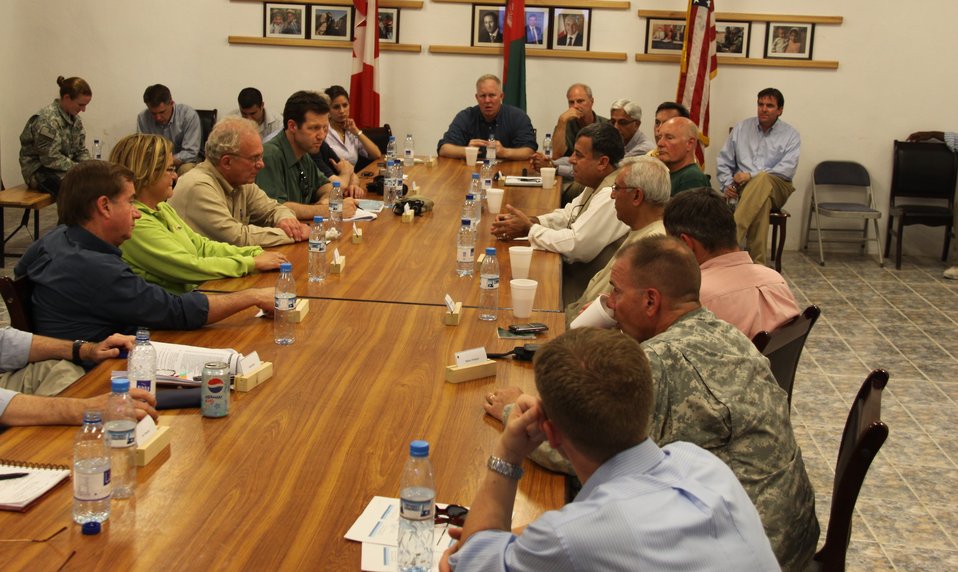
Meeting with Local Leaders in Kandahar